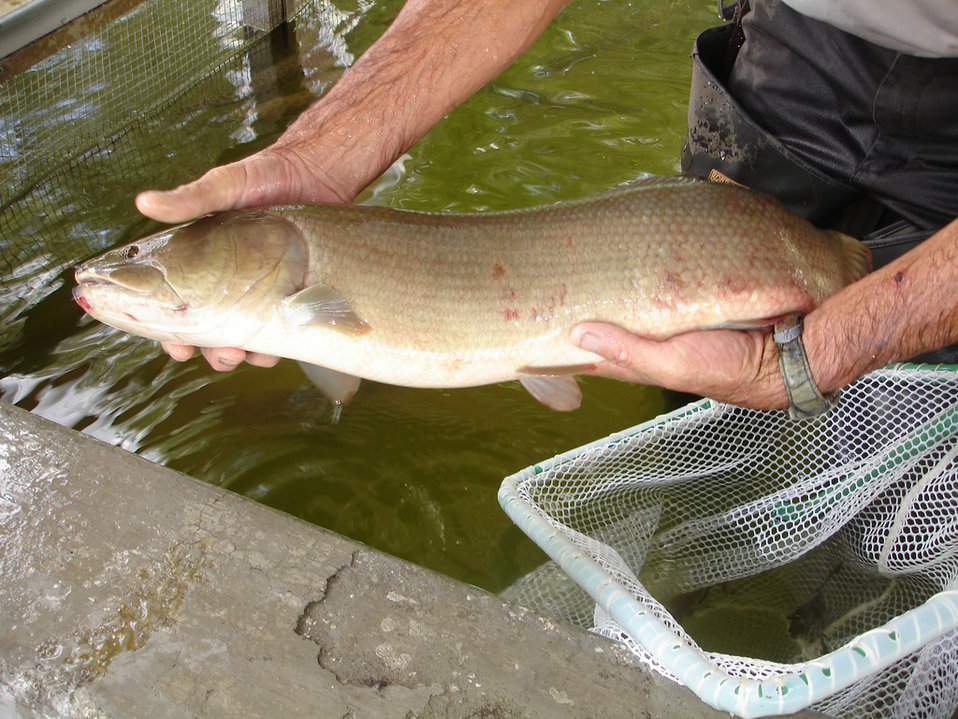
Bowin, Dogfish, Lawyer, Grinner

This fish of many names is the beneficiary of restored habitat done by the South Florida Fisheries Resources Office and the Miccosukee Tribe of Indians of Florida.